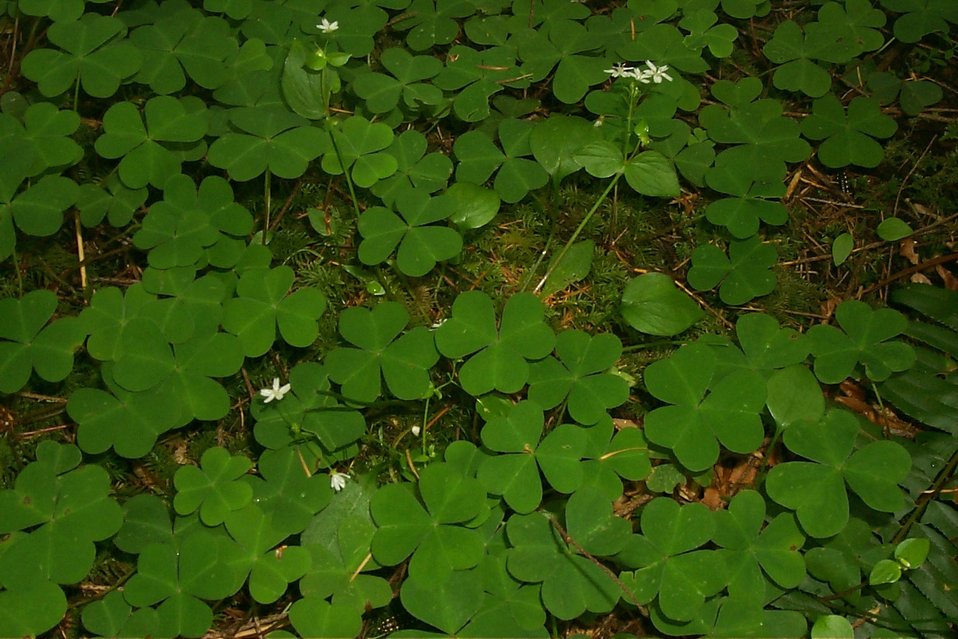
Camas East Timber Sale in Late Successional Reserve.